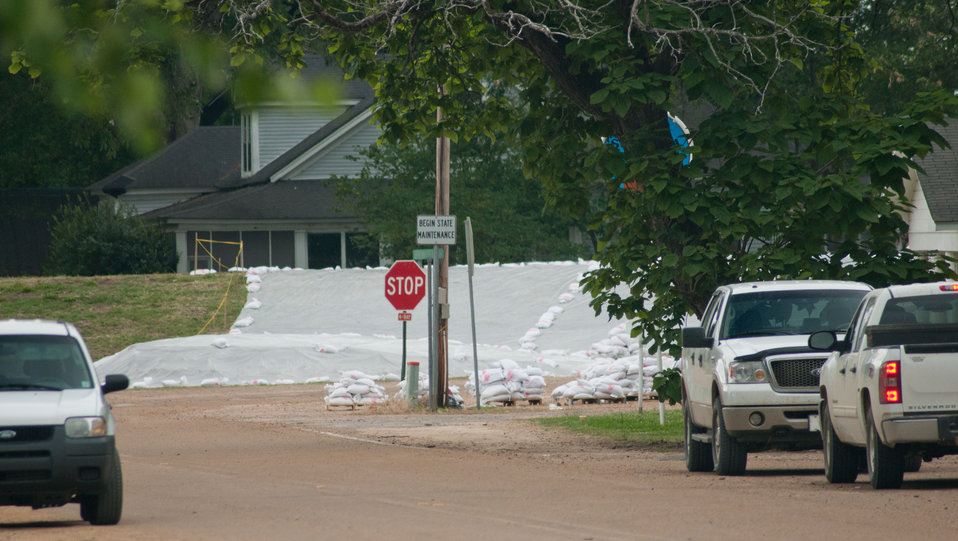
The Yazoo Mississippi Levee Board of Clarksville took emergency action more than two weeks ago by filling this roadway /bridge access across a waterway that flows through Satartia, MS, on Monday, May 16. 2011. The action was taken in preparation of the rising flood waters.